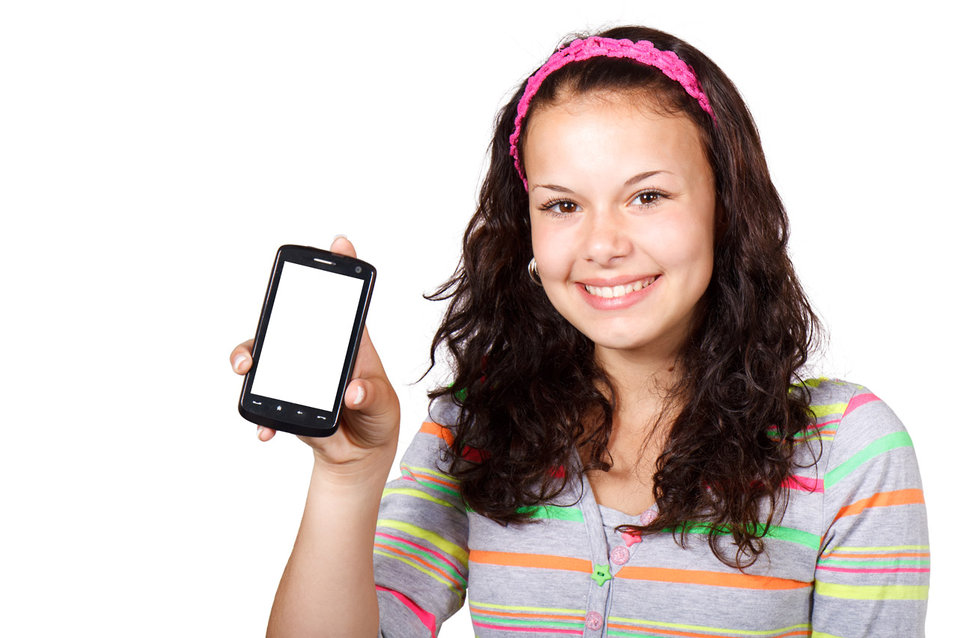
Teenager with smartphone

Young teenager dressed in colorful colors with blank touch screen smartphone isolated on white background.